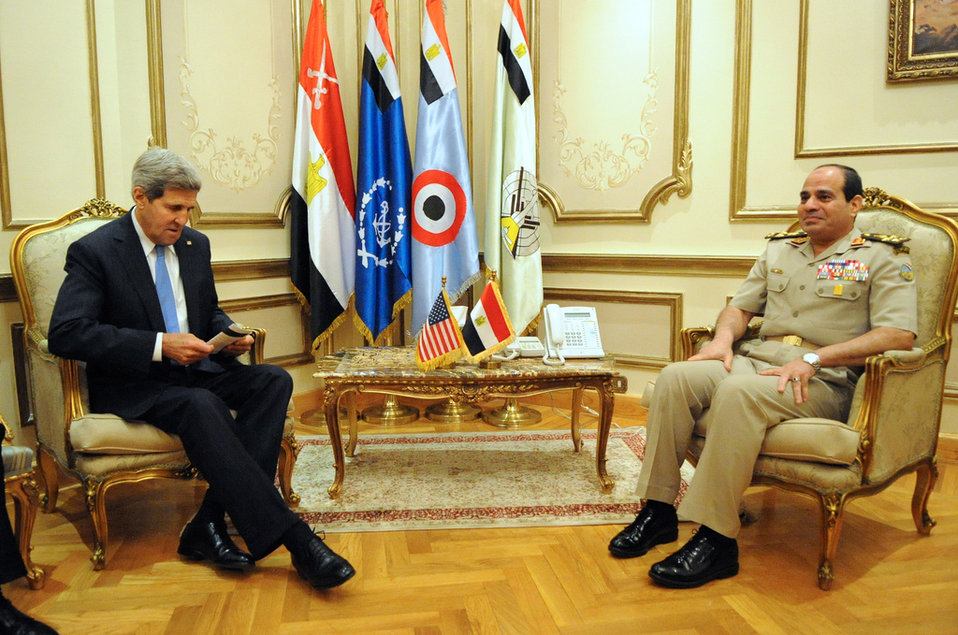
Secretary Kerry Meets With Egyptian Defense Minister General al-Sisi

U.S. Secretary of State John Kerry reviews his notes before a meeting with Egyptian Minister of Defense General Abdul Fatah Khalil al-Sisi in Cairo, Egypt, on November 3, 2013.